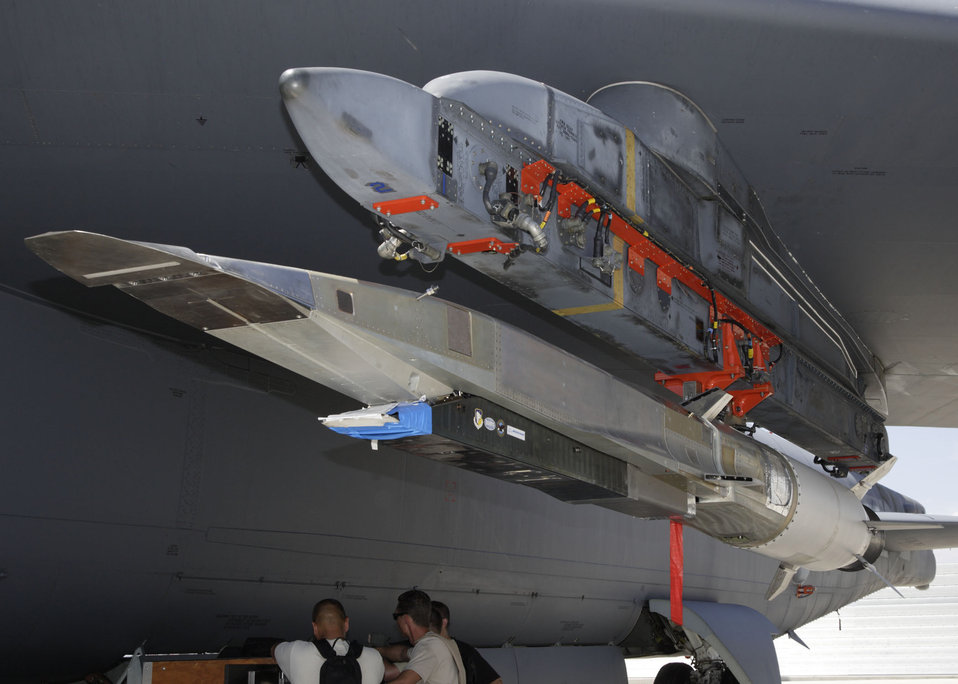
Waverider meets Stratofortress

The X-51A WaveRider hypersonic flight test vehicle was uploaded to an Air Force Flight Test Center B-52 Stratofortress at Edwards Air Force Base, Calif., July 17 for fit testing. Two B-52 test flights are planned this fall prior to the X-51's first hypersonic scramjet flight over the Pacific Ocean scheduled in December. Representatives from the Air Force Research Laboratory, DARPA, Pratt & Whitney Rocketdyne and Boeing are partnering on the X-51A technology demonstrator program.